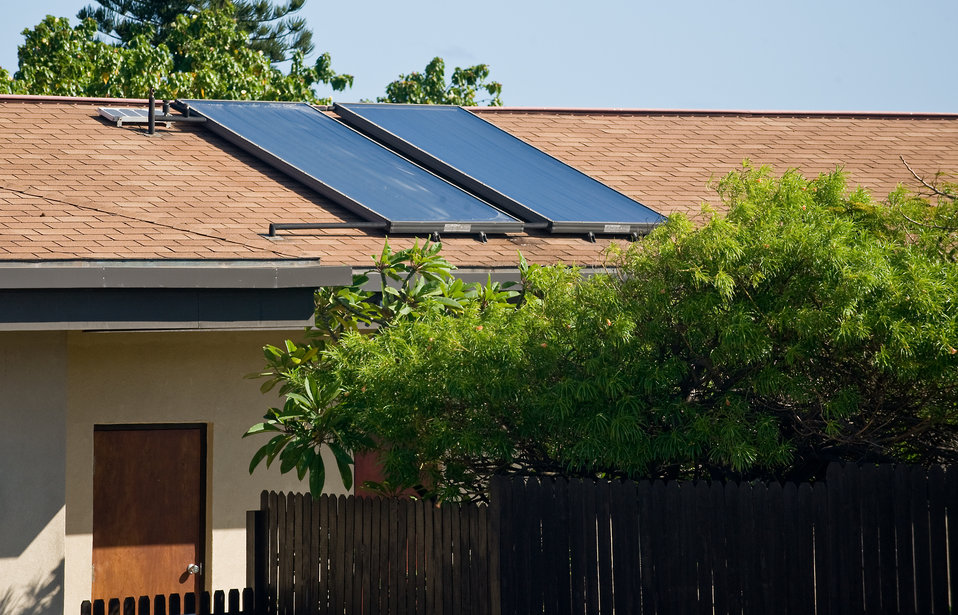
win the wind

Solar water heating panels make use of the free energy that shines down from the sun.